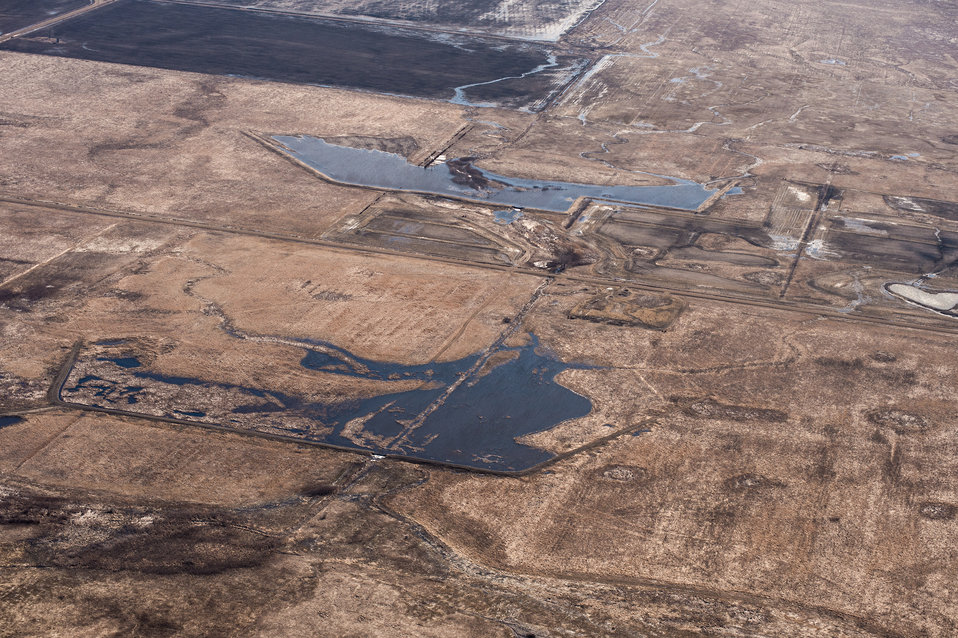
Ehlert North U.S. Department of Agriculture (USDA) Natural Resources Conservation Service (NRCS) Wetland Reserve Program (WRP) in Wilkin County, MN, on Tuesday, April 30, 2013. For information about this and other programs from the USDA Red River Basin Initiative (RRBI) please see www.mn.nrcs.usda.gov/news/features13/RRBI.html.